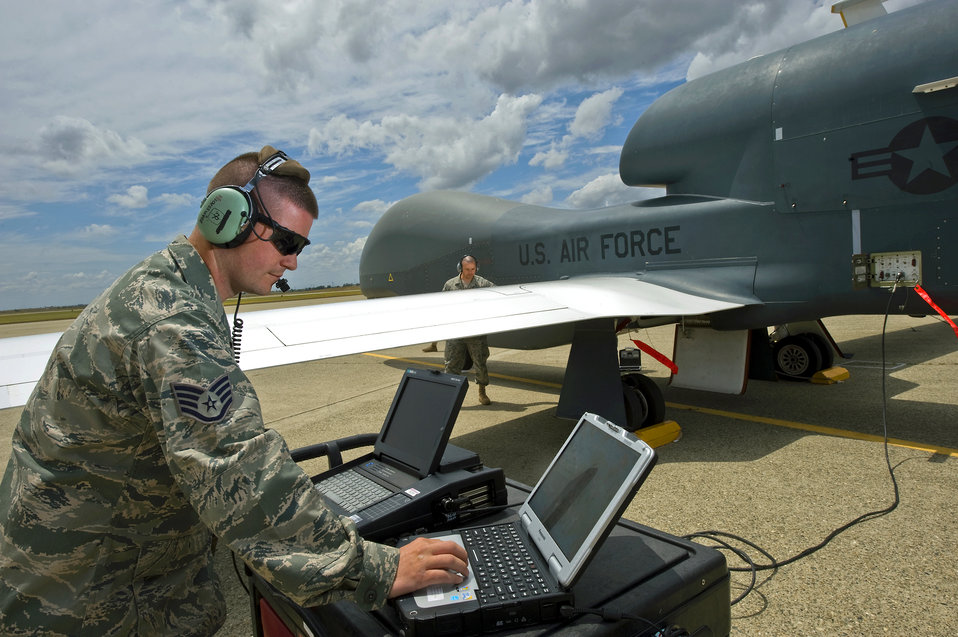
All systems go

Staff Sgt. Ryan Conversi prepares an RQ-4 Global Hawk for launch using the vehicle test controller while reviewing technical orders May 26, 2010, at Beale Air Force Base, Calif. Sergeant Conversi is a crew chief assigned to the 12th Reconnaissance Squadron.